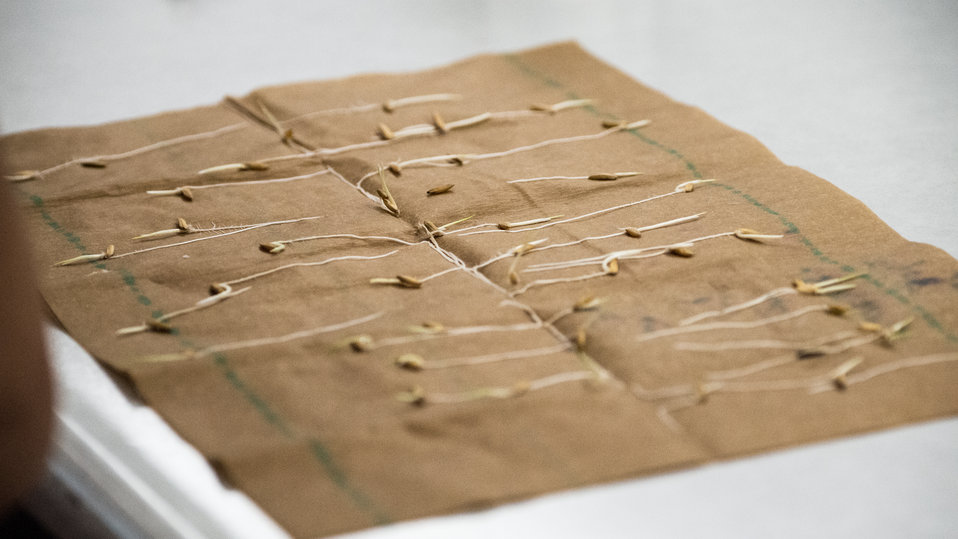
Seeds germinated in moist paper towels at the U.S. Department of Agriculture's (USDA) Agriculture Research Service (ARS) National Center for Genetic Resources Preservation (NCGRP) are ready for the seed quality evaluation in the germination bay of the Plant and Animal Genetic Resources Preservation Research Unit, in Ft. Collins, CO on Wednesday, Nov. 6, 2013.